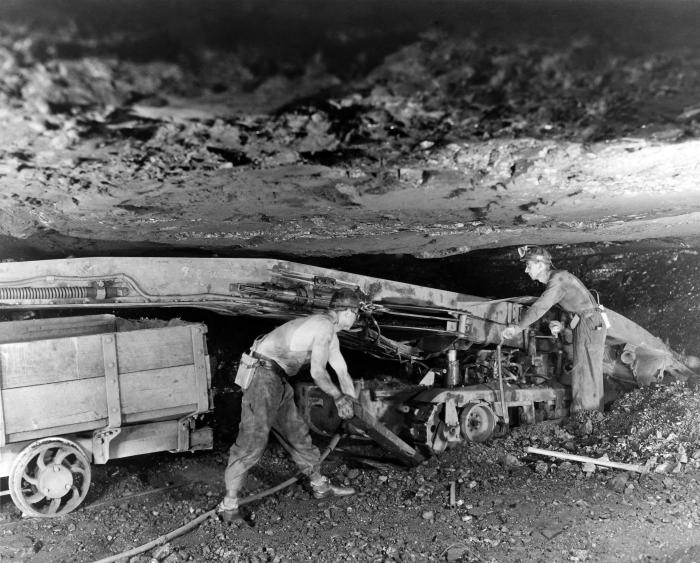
This historic image, provided by the Center for Disease Control's (CDC), National Institute for Occupational Safety and Health (NIOSH), depicted two miners inside a coal mine as they were operating a mechanized coal bin loader. The loader was excavating raw ore from the walls of the mine shaft, and then dumping the ore into a wooden railcar. Of importance, was the fact that neither miner was wearing protective breathing gear, which would have filtered the dust-laden air prior to inhalation by the miners. Due to the inescapable presence of airborne coal dust in the small confines of a mine, miners are predisposed to the long-term negative health effects of this profession such as 'black lung disease', or 'coal-workers' pneumoconiosis' (CWP). Today, the Federal government's stringent regulations on the level of coal dust permissible in the air of a coal mine, and the requisite use of filtered breathing devices, has dramatically lowered the number of cases of black lung disease.